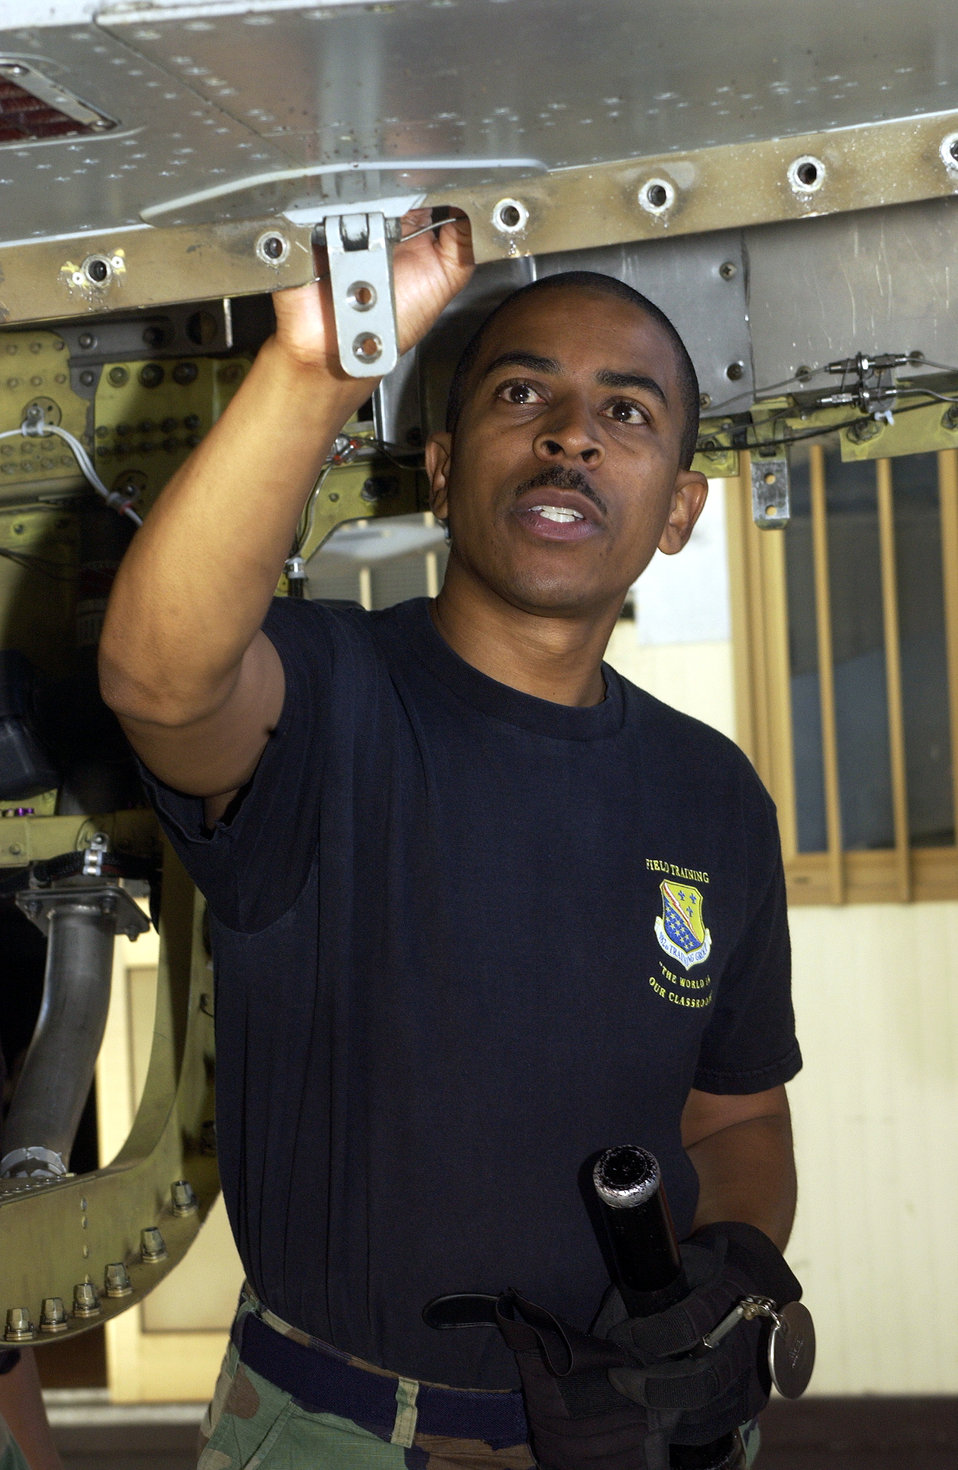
Teaching the Airmen

AVIANO AIR BASE, Italy -- Tech. Sgt. Gerald Jackson inspects an F-16 A Fighting Falcon model training jet for engine removal and installation training here July 27. Sergeant Jackson is a field training instructor of the 31st Aircraft Maintenance Squadron.